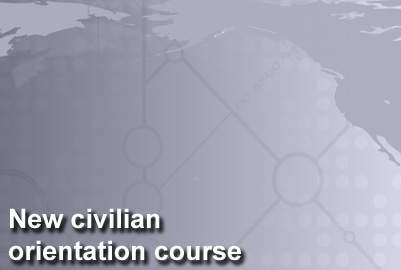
Force Development announces new civilian orientation course

As the Air Force continues developing its total force initiatives, heritage, culture and core values are now available to new civilians with the advent of a comprehensive online